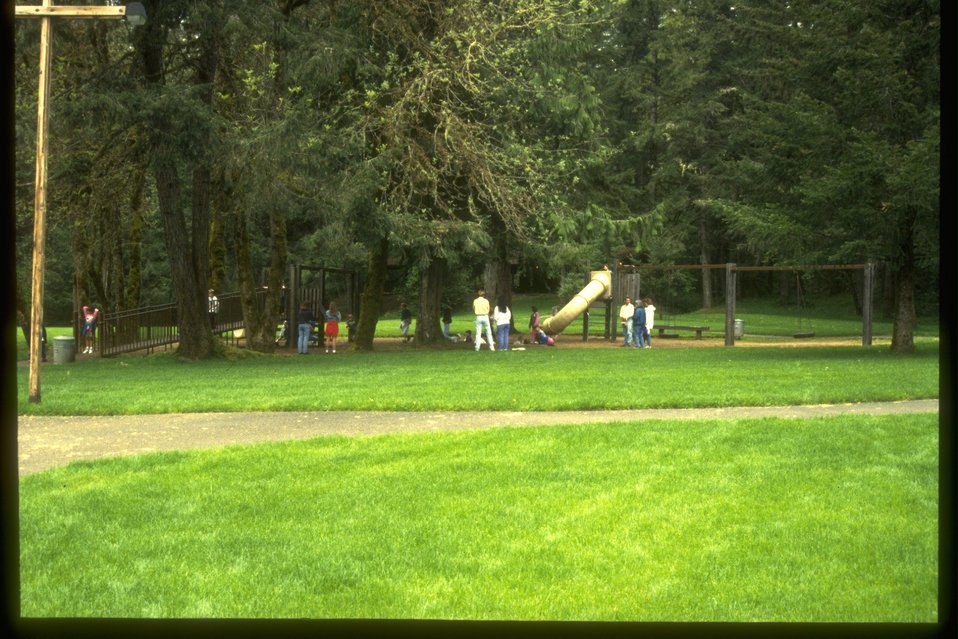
Playground at Shotgun Park.